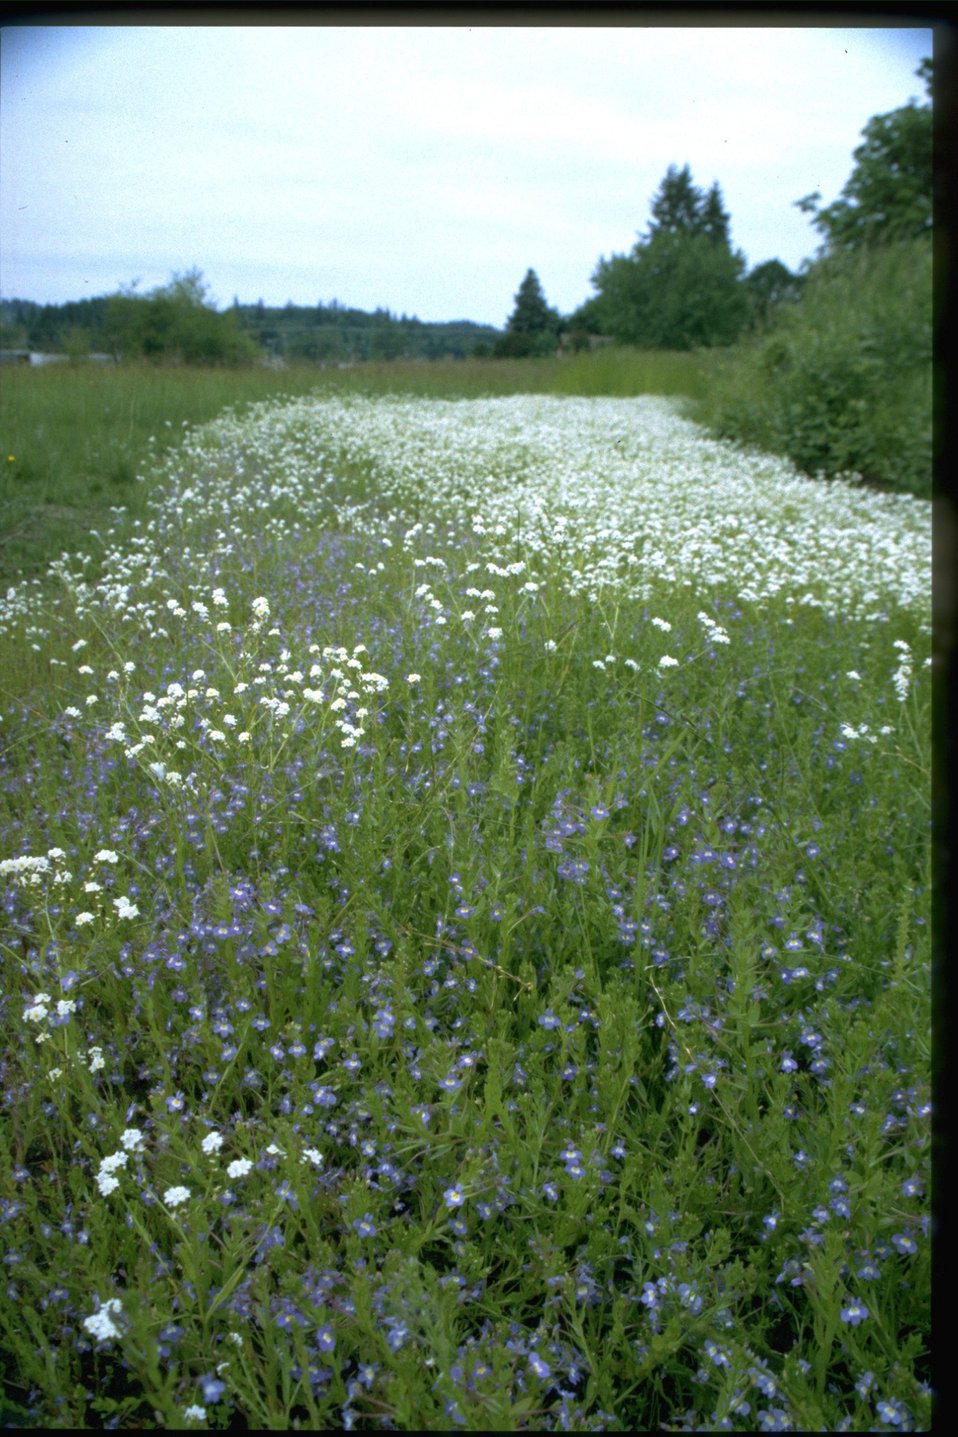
Far shot of Plagiobothrys figurantus.